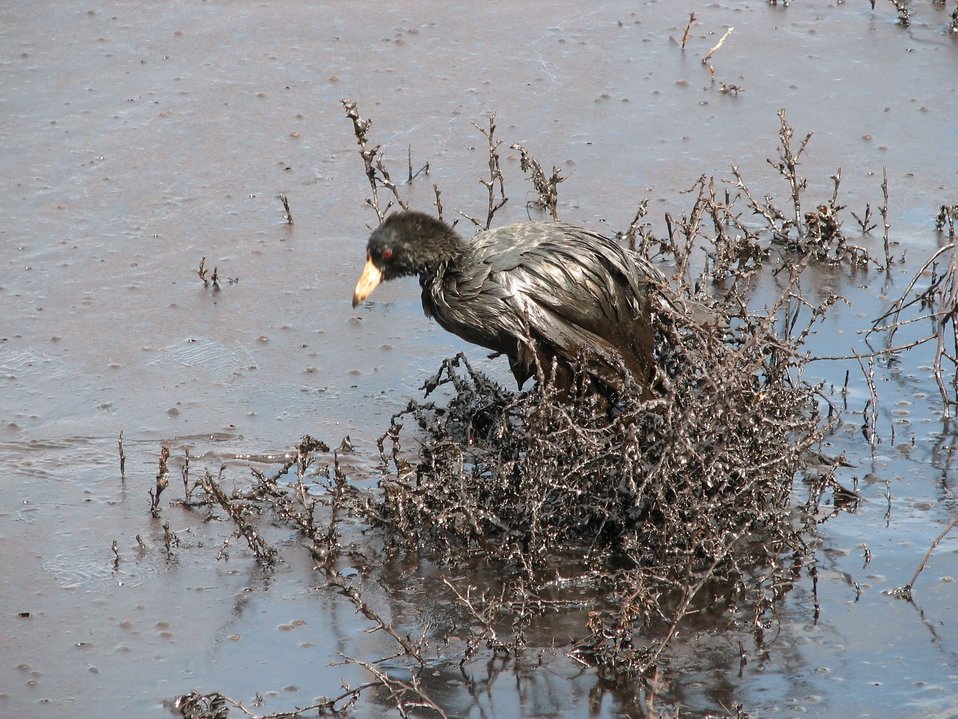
American Coot in Oil-covered Pond

American coot on an oil-covered evaporation pond at a commercial oilfield wastewater disposal facility. An estimated 500,000 to 1,000,000 migratory birds die each year in oilfield production skim pits and oil-covered evaporation ponds.